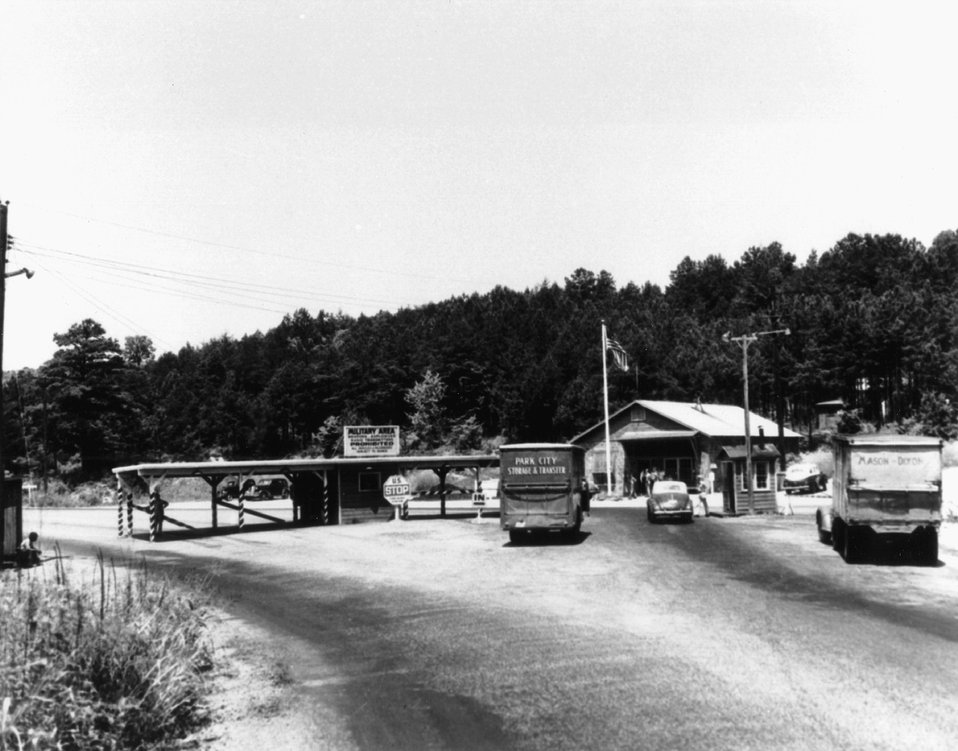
South entrance to Oak Ridge Area. c. 1946